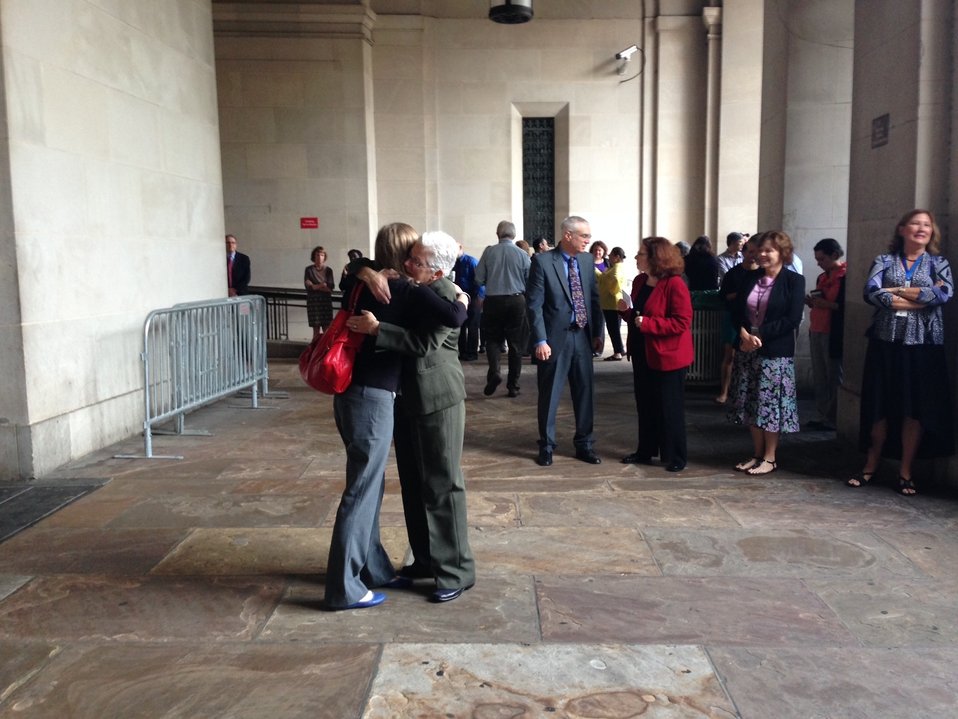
Administrator Gina McCarthy Greets Employees

Administrator McCarthy was out this morning greeting our staff as we returned to work. Her message: 'We missed you! Thanks for your service to this country.'